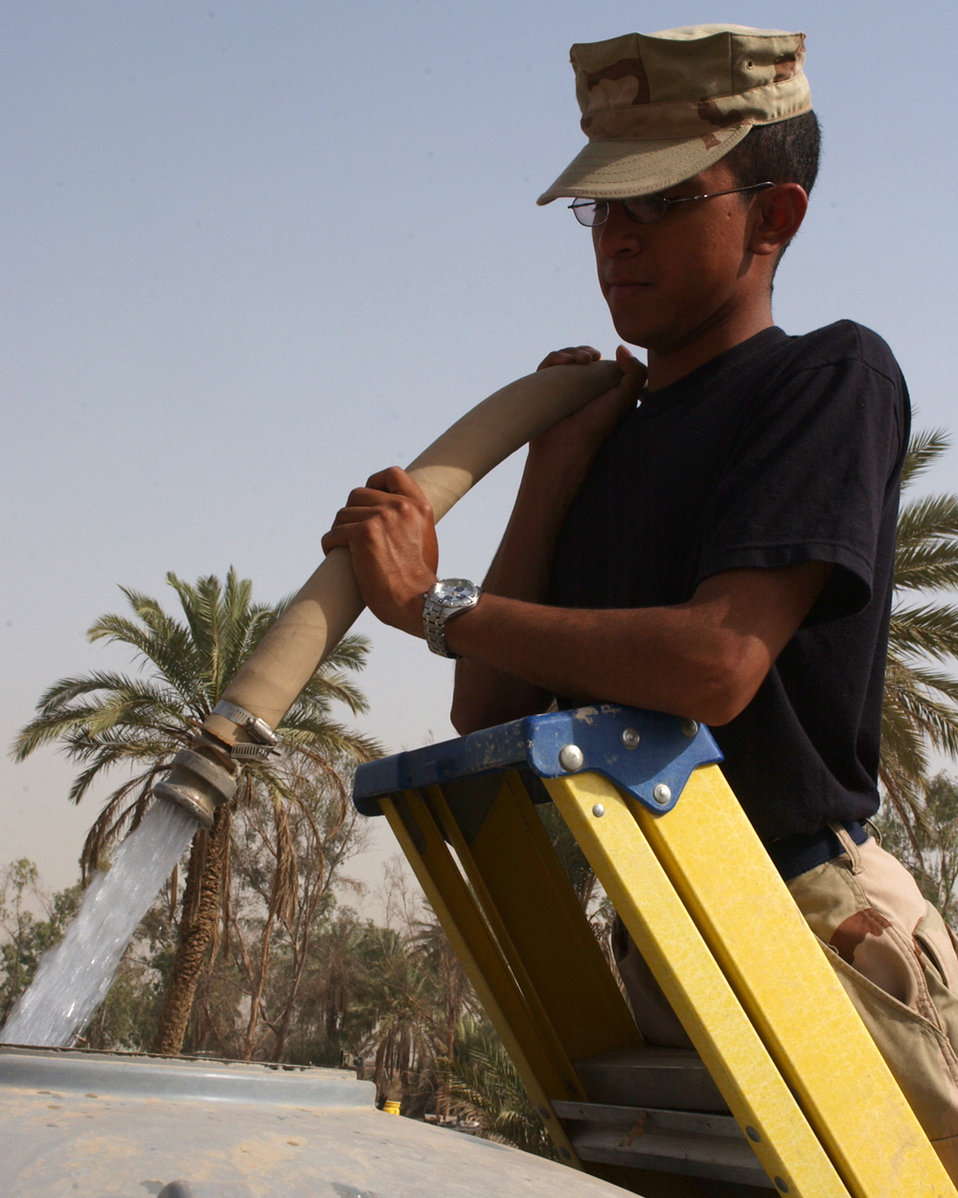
Deployed plumbers keep water flowing

BAGHDAD, Iraq -- Airman 1st Class Juan Rodriguez fills a fresh water tank here. He is assigned to the 447th Expeditionary Civil Engineer Squadron and is deployed from Kadena Air Base, Japan.